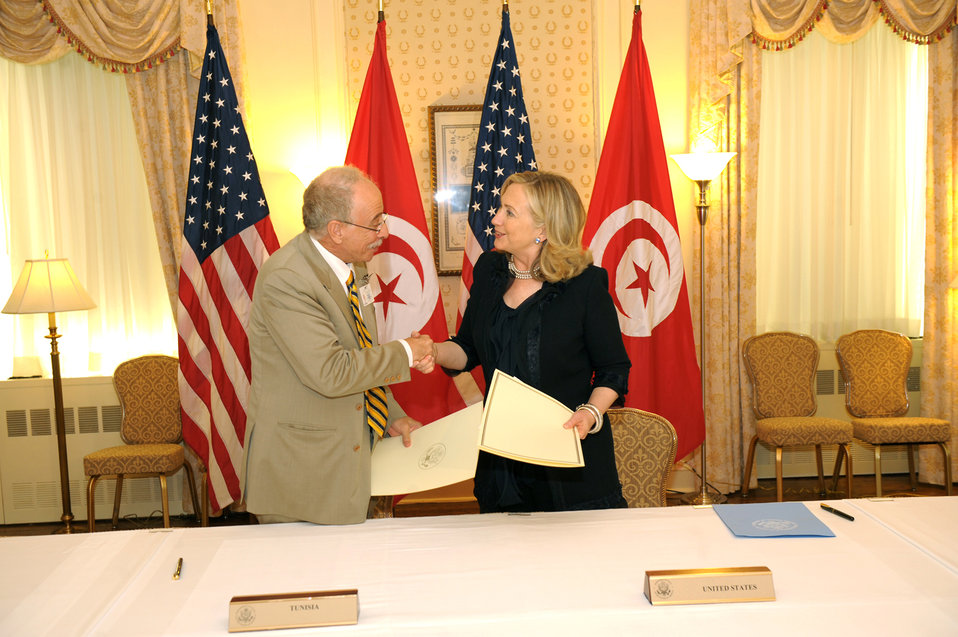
Secretary Clinton Meets With Tunisian Foreign Minister Kefi

U.S. Secretary of State Hillary Rodham Clinton holds a bilateral meeting and signing ceremony with Tunisian Foreign Minister Kefi, at the Waldorf-Astoria Hotel in New York, New York, on September 22, 2011.